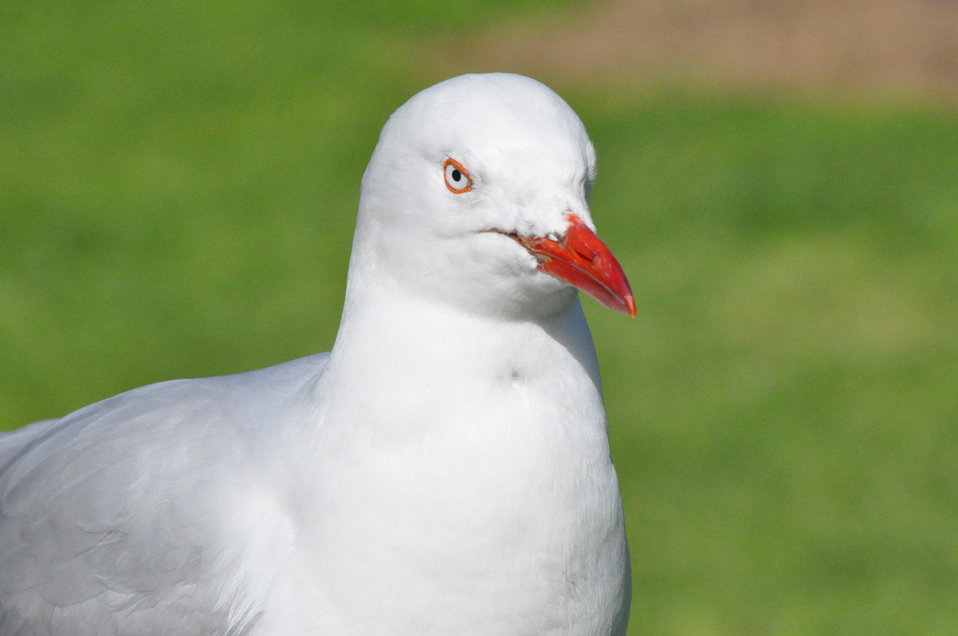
Seagull up close.